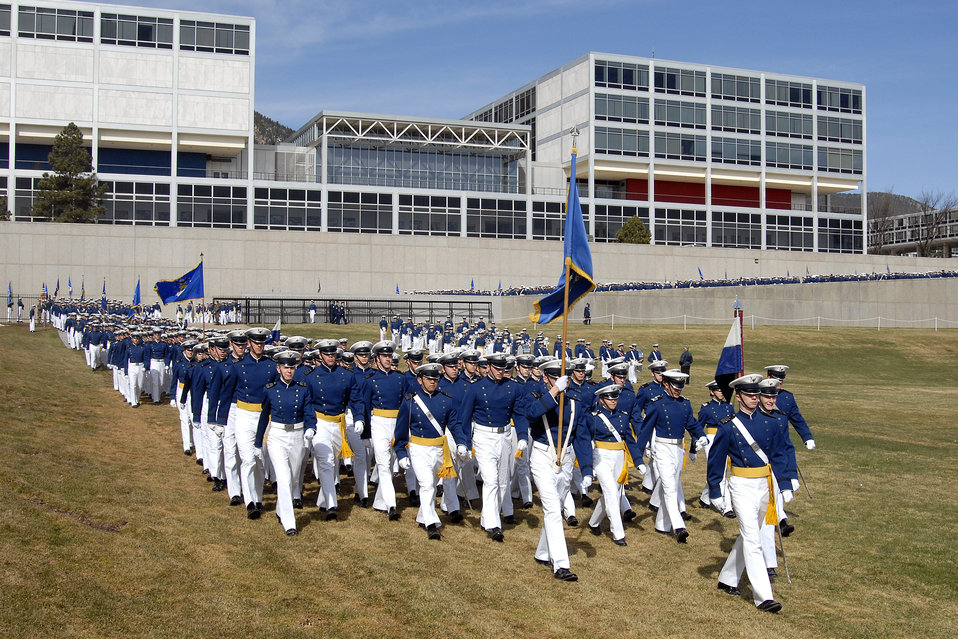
Academy salutes founders

Cadet Squadron 2 marches onto the Stillman Parade Field for the Founders Day and Sponsors Day Parade April 5 at the U.S. Air Force Academy in Colorado. The parade, serving two purposes, honored the authorization and founding of the Academy, which began construction July 11, 1955. The parade also honored the 3,500 cadet sponsors; those men, women and families who open their hearts and homes to members of the cadet wing to enhance cadet life and develop officers of character.